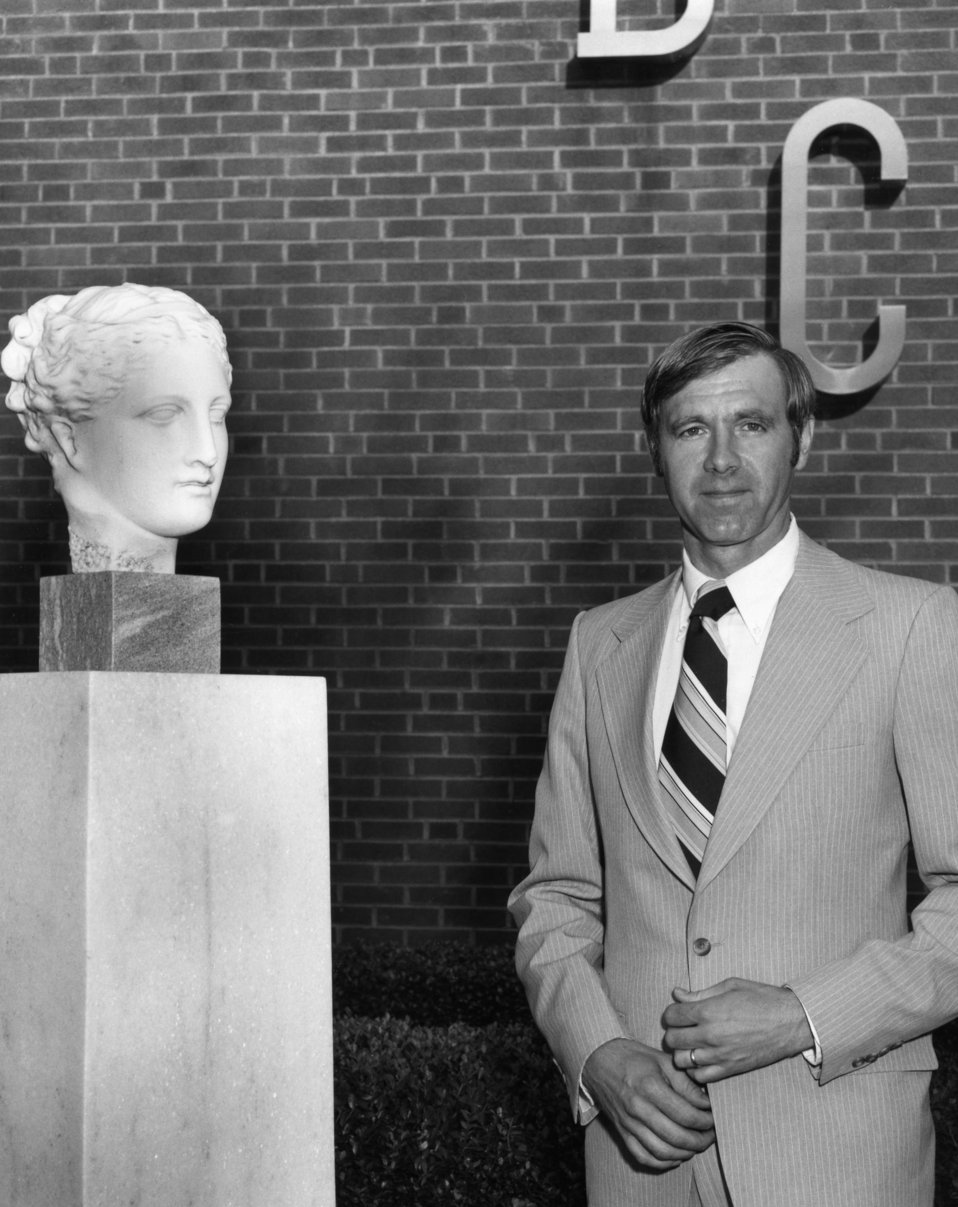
Standing next to the bust of Hygeia, the Greek goddess of health, former Centers for Disease Control director William H. Foege, M.D., M.P.H. (1977 - 1983), was shown on the grounds of the CDC's campus on Clifton Road in Atlanta, Georgia.